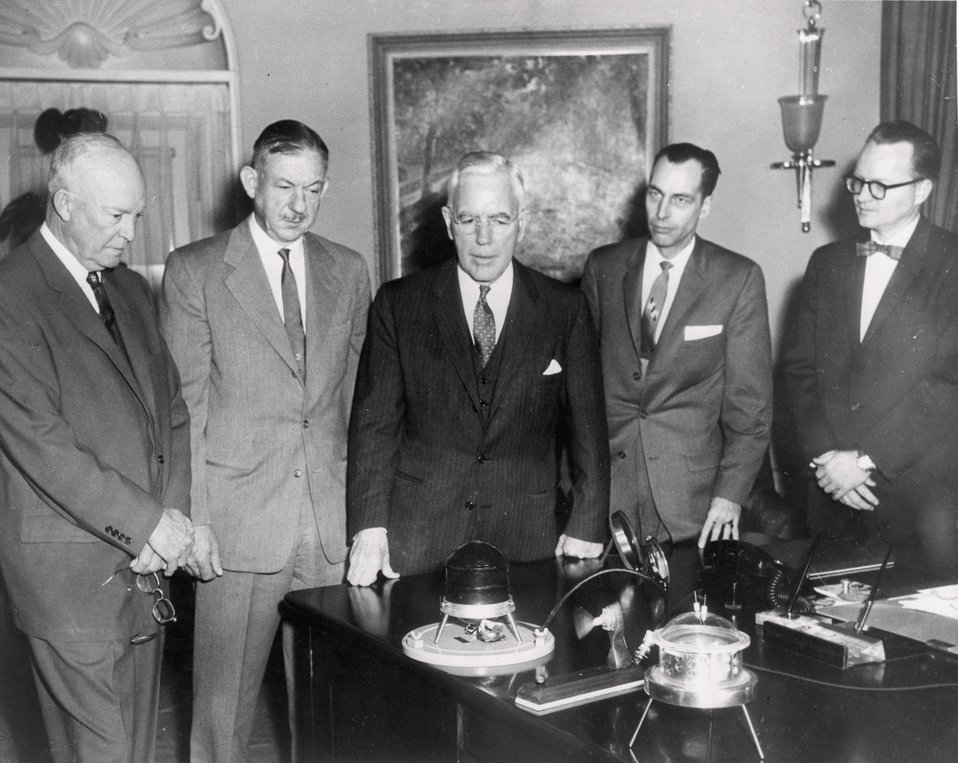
PUBLIC DEBUT OF THE RTG TECHNOLOGY, JANUARY 16, 1959. VIEW THE SNAP-3 DEMONSTRATION DEVICE DISPLAYED ON PRESIDENT EISENHOWER'S DESK ARE(LEFT TO RIGHT): PRESIDENT EISENHOWER( AND FROM THE AEC) MAJOR GENERAL DONALD KEIRN, CHAIRMAN JOHN MC CONE, COLONEL JACK ARMSTRONG, LT. COLONEL GUVEREN ANDERSON.